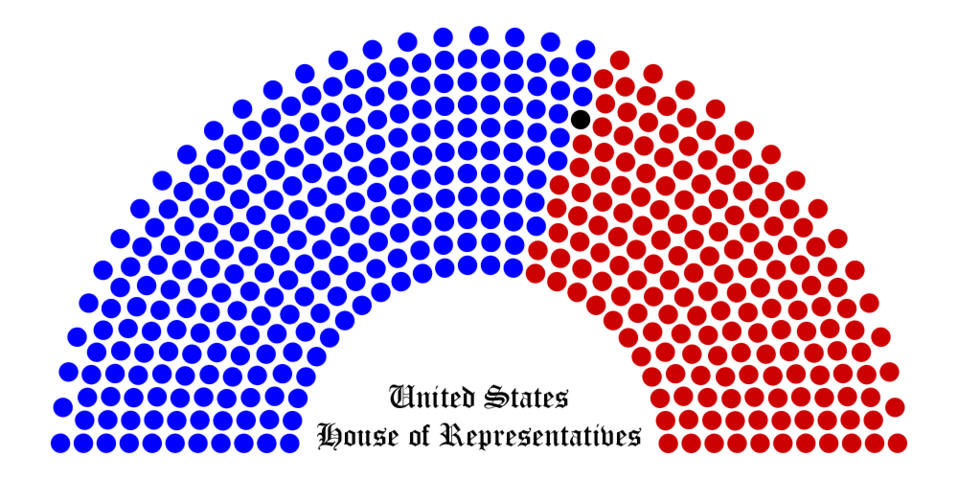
Breakdown of political party representation in the United States House of Representatives during the 111th Congress.
Blue: Democrat
Red: Republican
Black Vacant (Solis)